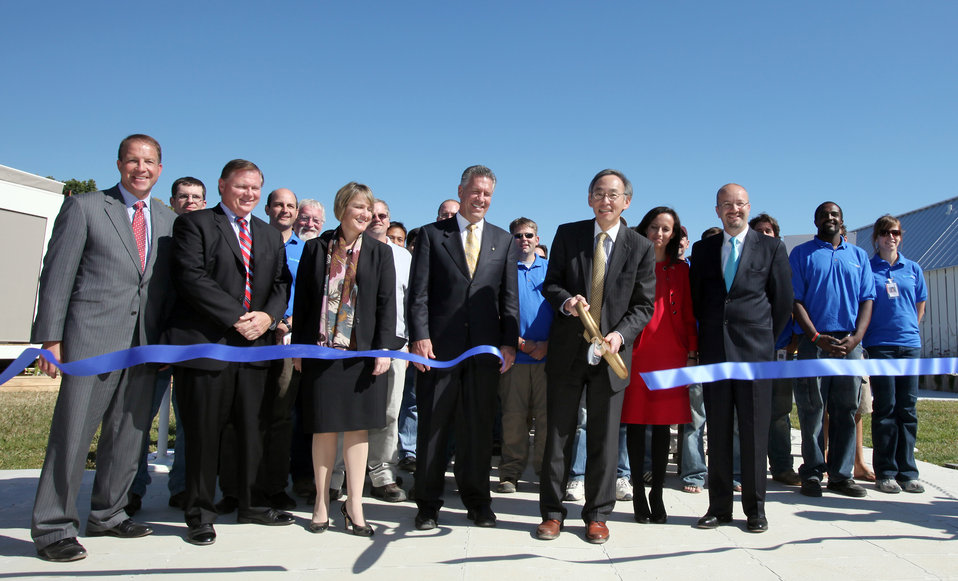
U.S. Secretary of Energy Steven Chu cuts the ribbon to officially open the U.S. Department of Energy Solar Decathlon 2009 on the National Mall in Washington, DC, Thursday, October 8, 2009.

Shown in the picture from left are: Acting Deputy Assistant Secretary for Energy Efficiency and Renewable Energy John Lushetsky; Josph Rigby , CEO of Pepco Holdings Inc.; Amy Huntington, president of Schneider Electric ; Mike Splinter, CEO of Appiled Materials; Secretary of Energy Chu; Spain Housing Minister Beatriz Corredor; and BP Solar CEO Reyad Fezzani. The U.S. Department of Energy Solar Decathlon Features energy-efficient, solar-powered houses built by 20 university teams from North American and Europe.